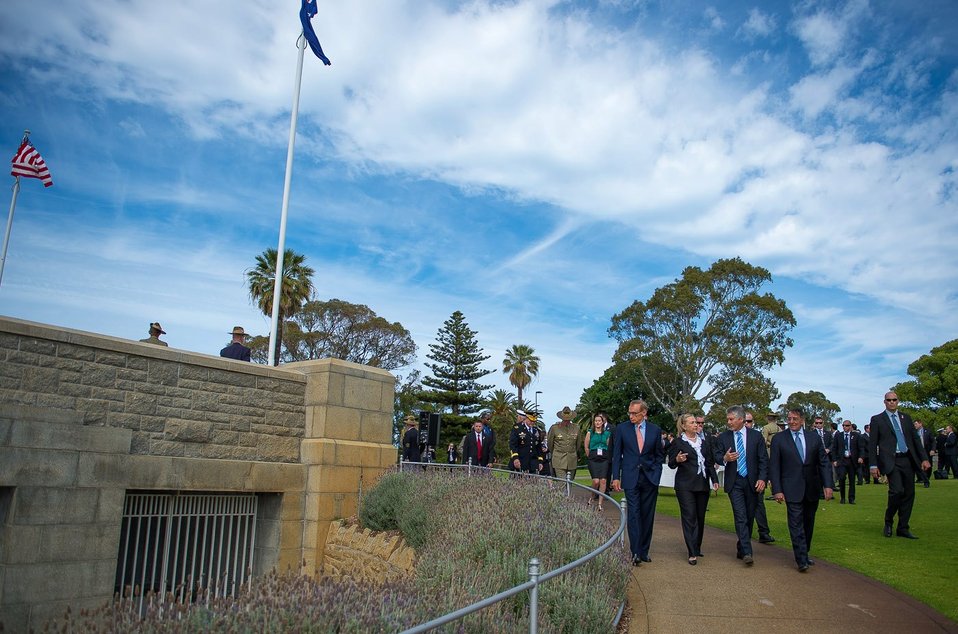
Australian Ministers Carr and Smith Walk With Secretaries Clinton and Panetta

From left to right, Australian Foreign Minister Robert Carr, U.S. Secretary of State Hillary Rodham Clinton, Australian Defense Minister Stephen Smith, and U.S. Secretary of Defense Leon Panetta walk together after participating in a wreath-laying ceremony at at Kings Park and Botanic Garden in Perth, Australia, November 14, 2012. [U.S. Embassy in Canberra, Australia photo by Travis Longmore/ Public Domain]